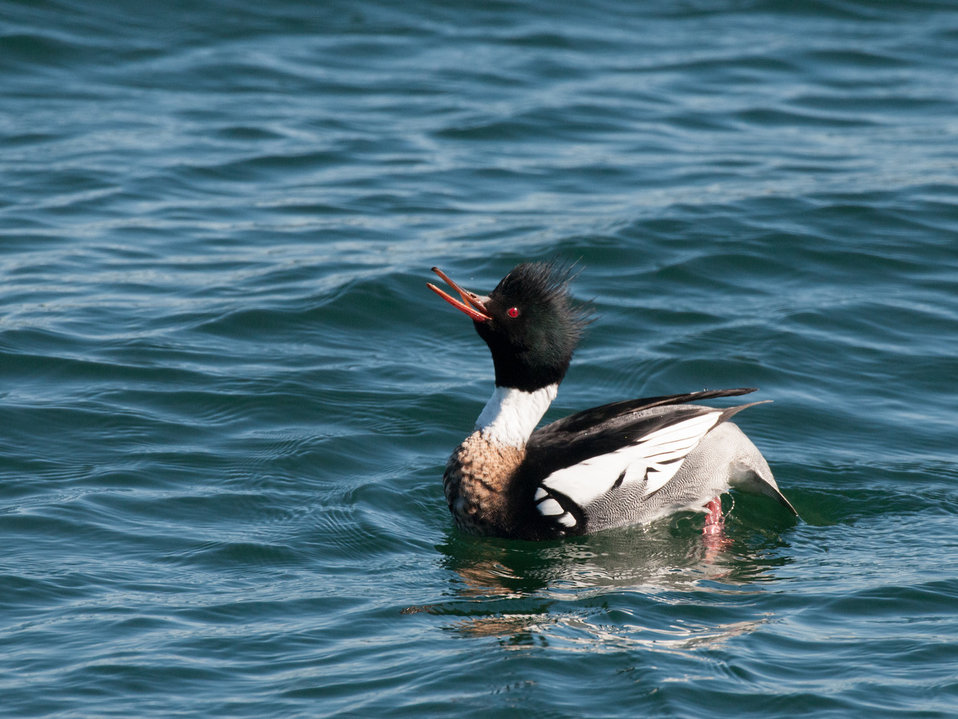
Red-breasted Merganser - Male

Photographed in Provincetown, MA.